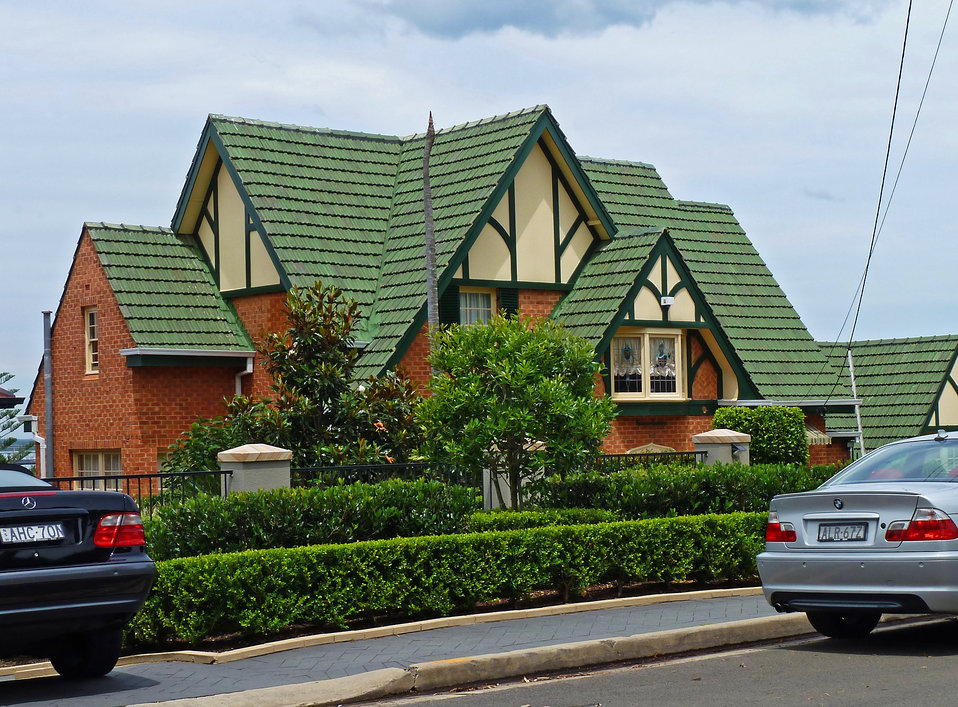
10–12 Kangaroo Point Road, Kangaroo Point, New South Wales, Australia.